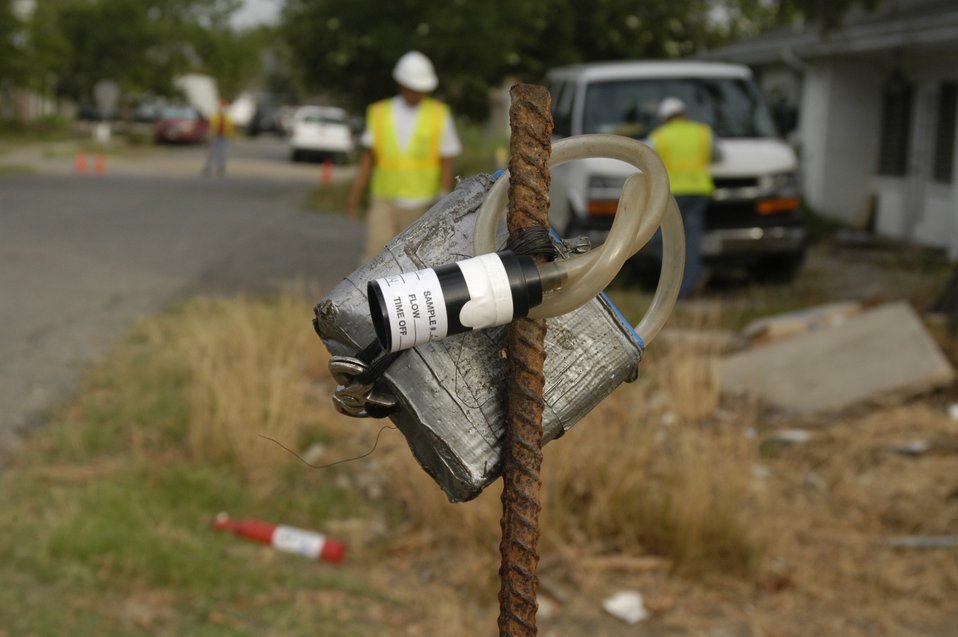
Many of the older homes and buildings in the New Orleans, LA, locale that were destroyed by Hurricane Katrina contained asbestos material (i.e. asbestos roofing tiles, transite siding, insulation, floor tiles, and popcorn ceilings). The U.S. Army Corps of Engineers (USACE) was mandated to follow strict environmental protocols in the demolition of these homes that were designated Regulated Asbestos Containing Material (RACM) demos. Special air sampling collectors were placed around the area of the demolition and were monitored to ensure that asbestos particulates remained with safe margins.